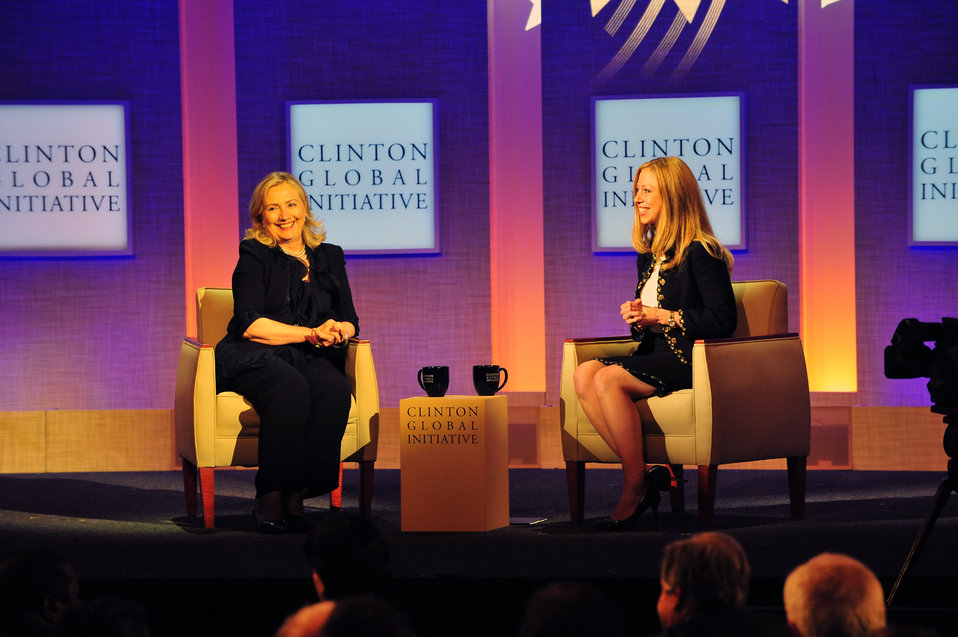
Secretary Clinton and Chelsea Clinton Participate in the Clinton Global Initiative Annual Meeting

U.S. Secretary of State Hillary Rodham Clinton and Chelsea Clinton participate in the Clinton Global Initiative Annual Meeting and hold a one-on-one “conversation” during the Closing Plenary, at the Sheraton Midtown Hotel in New York, New York, on September 22, 2011.